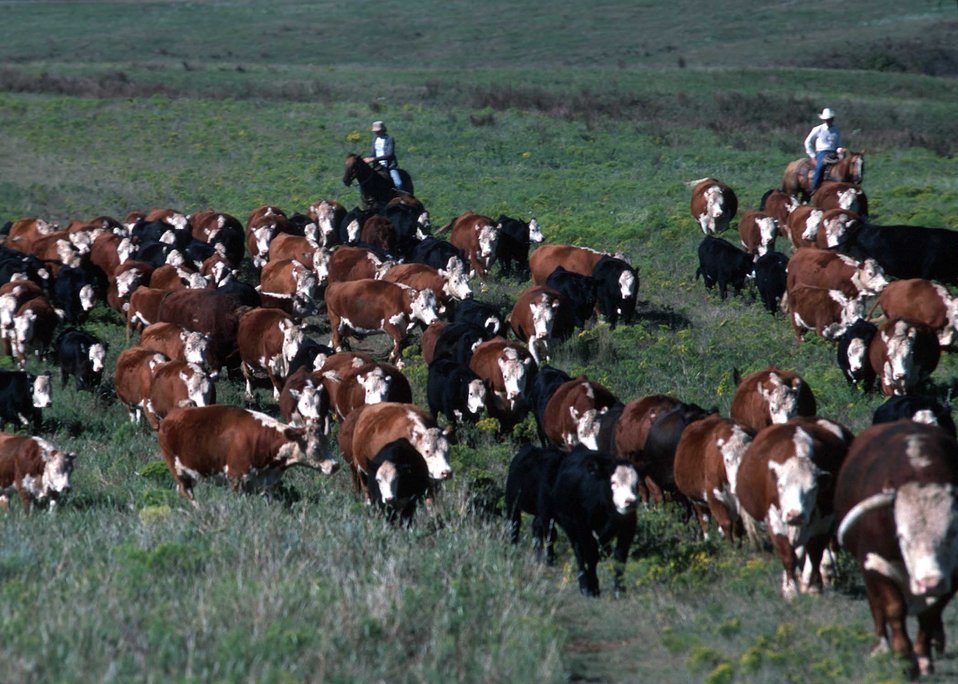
Ranchers herd cattle on healthy rangeland.